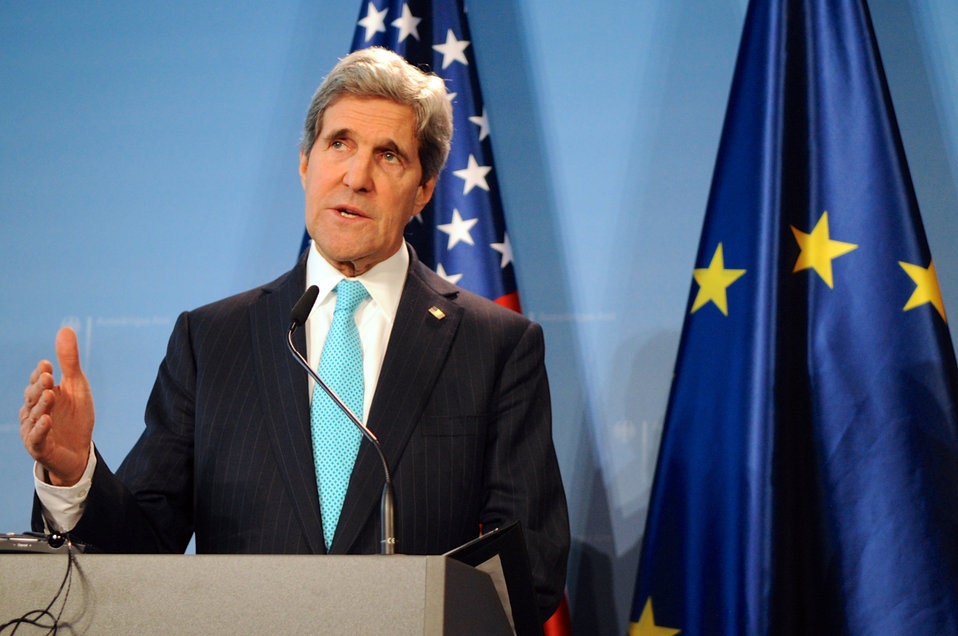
Secretary Kerry Addresses Reporters During News Conference in Berlin

U.S. Secretary of State John Kerry addresses reporters during a joint news conference with German Foreign Minister Frank-Walter Steinmeier in Berlin, Germany, on January 31, 2014.